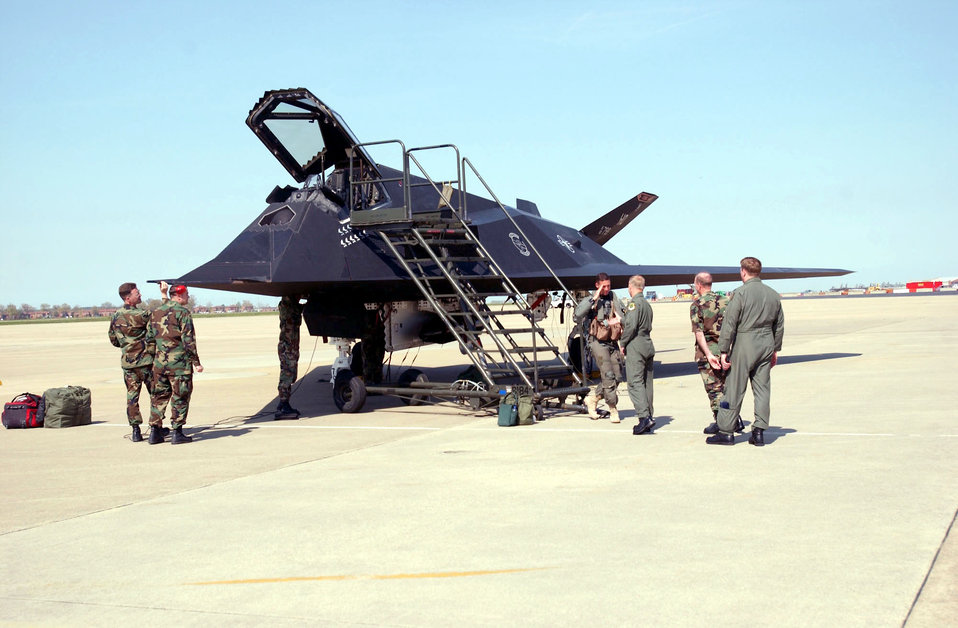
Nighthawk layover

LANGLEY AIR FORCE BASE, Va. -- Col. Steve Miller, Commander of the 1st Fighter Wing greets the pilot of one of the six F-117A Nighthawk stealth fighters from Holloman Air Force Base, N.M., that landed here, on their way back to home base, April 14, 2003. The F-117s deployed on the 3rd of February with about 300 support personnel. All personnel are expected to return by the end of the month. The F-117s played a critical role in the first night of bombing, dropping four EGBU-27s on a high priority target. Two F-117s each unleashed two EGBU-27s on a structure in Baghdad on March 20th where Saddam Hussein was believed to be.